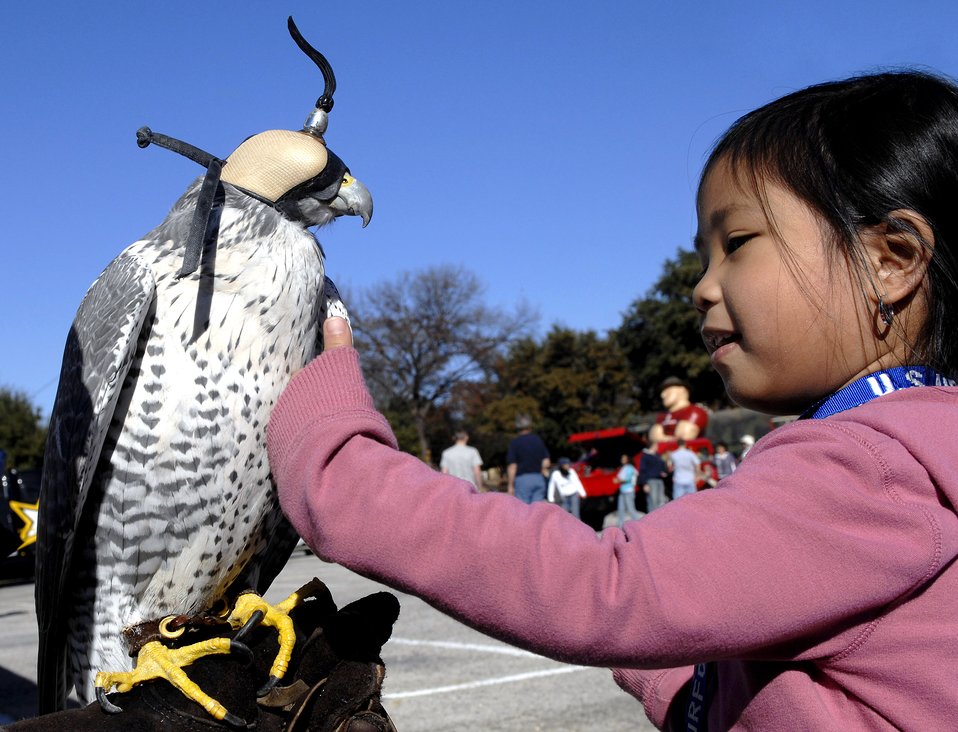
Nice birdie...

Janeiyah Cajudoy, 4, pets Destiny, an Air Force Academy Falcon mascot on display during pre-game activities Dec. 30 before the Bell Helicopter Armed Forces Bowl game in Fort Worth, Texas, between the Academy Falcons and the University of California-Berkley.